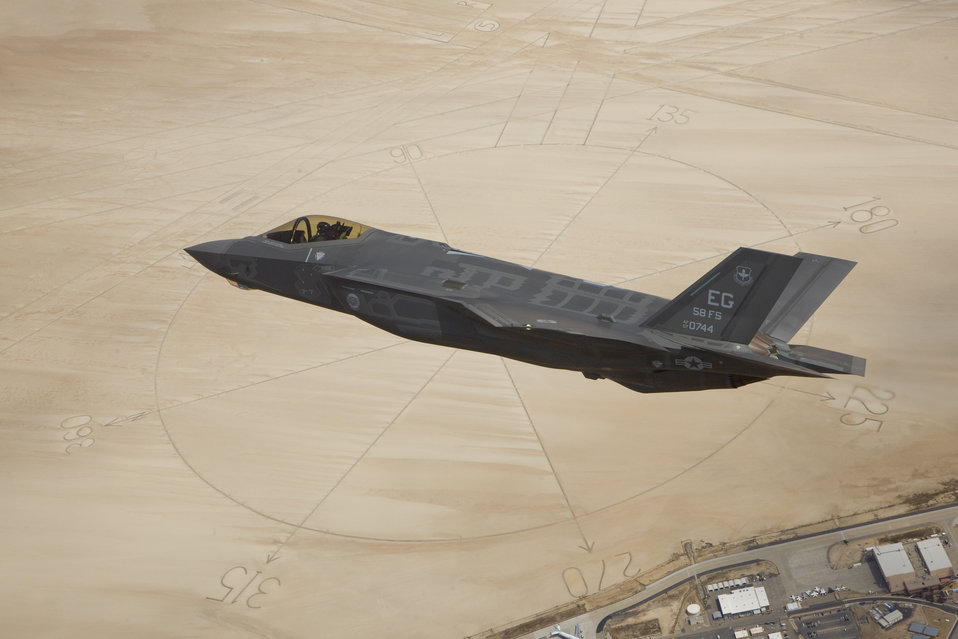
Good directions

An F-35A Lightning II flies May 13, 2011, above the compass rose of Rogers Dry Lakebed at Edwards Air Force Base, Calif.